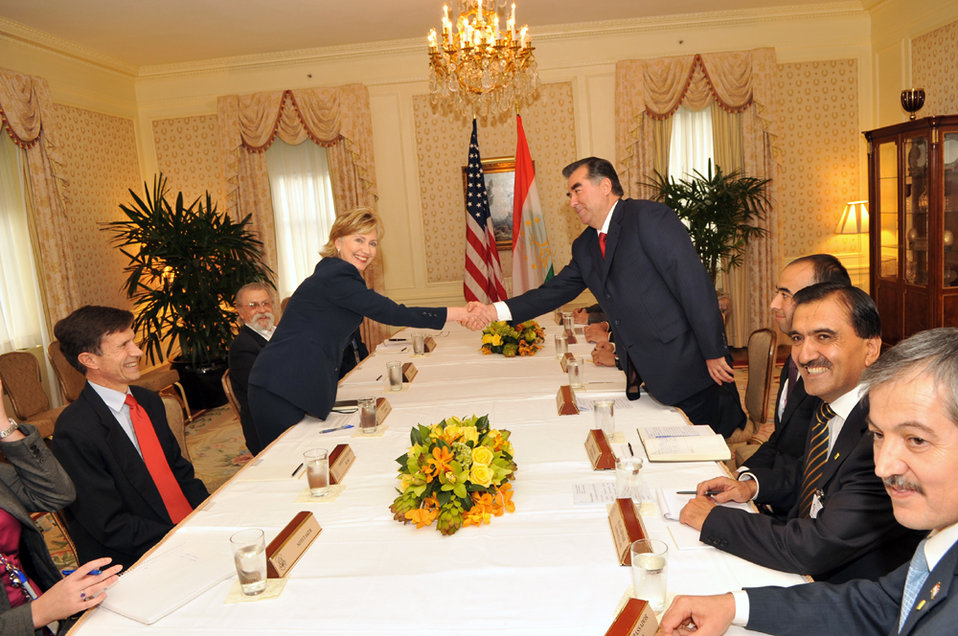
UNGA 2009: Secretary Clinton Meets With Tajikistan President

U.S. Secretary of State Hillary Rodham Clinton meets with Tajikistan President Emomali Rahmon at the Waldorf Astoria hotel during the 64th Session of the UN General Assembly in New York City, New York September 24, 2009.